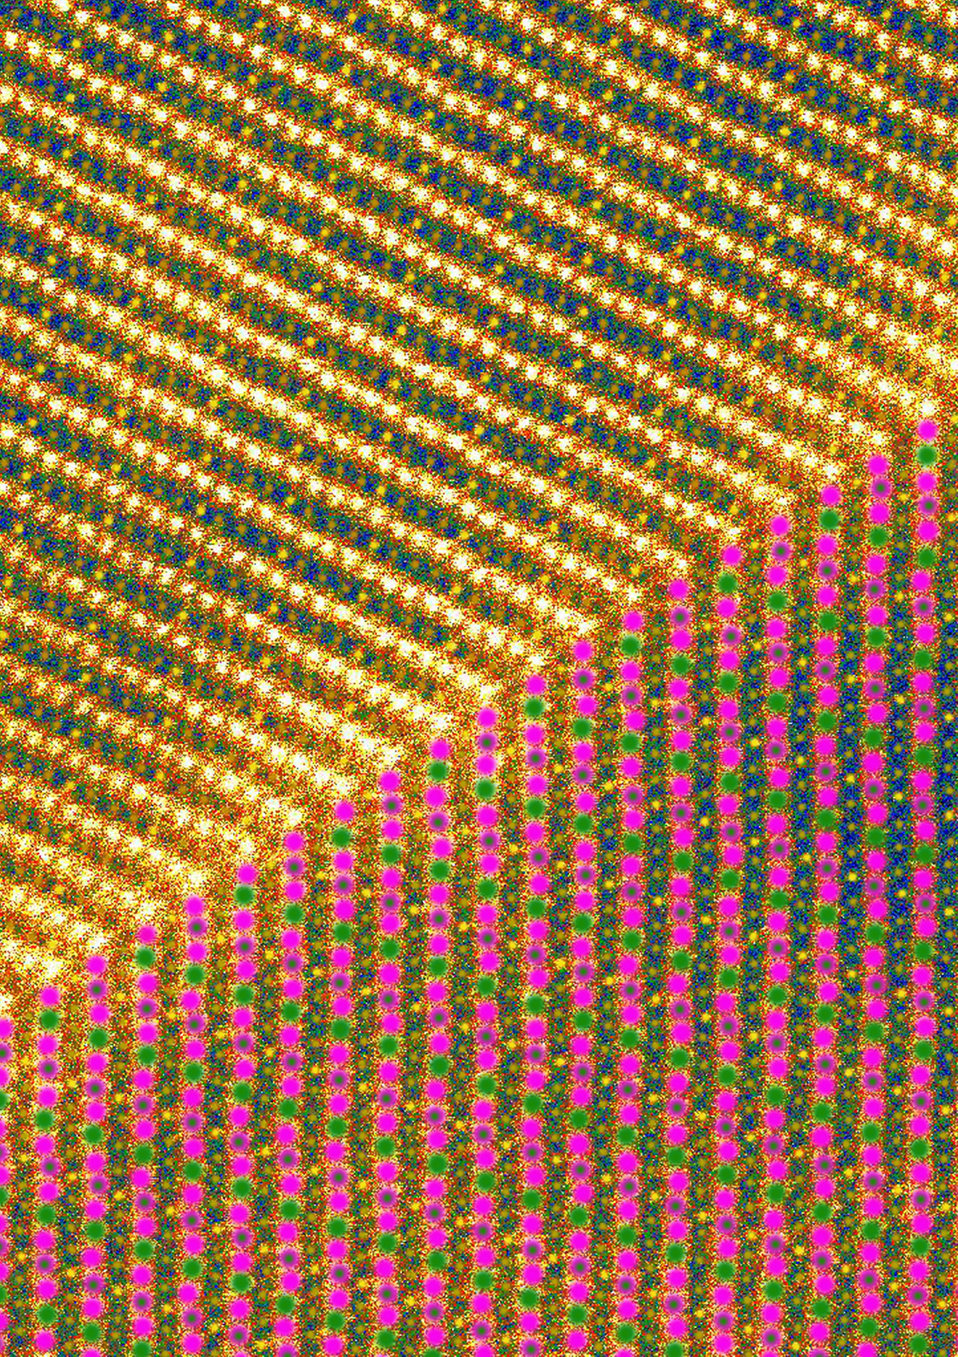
Manganese-based Crystal

At top of this image a, sodium fills in layers of the crystal, represented by one bright yellow dot followed by three darker ones; at bottom, the layers? magnetic ordering is shown as green and purple dots representing magnesium at two different charge states, with the green-in-purple dots representing a mixture of the two charge states. Artwork generated from a scanning tunneling microscope image.